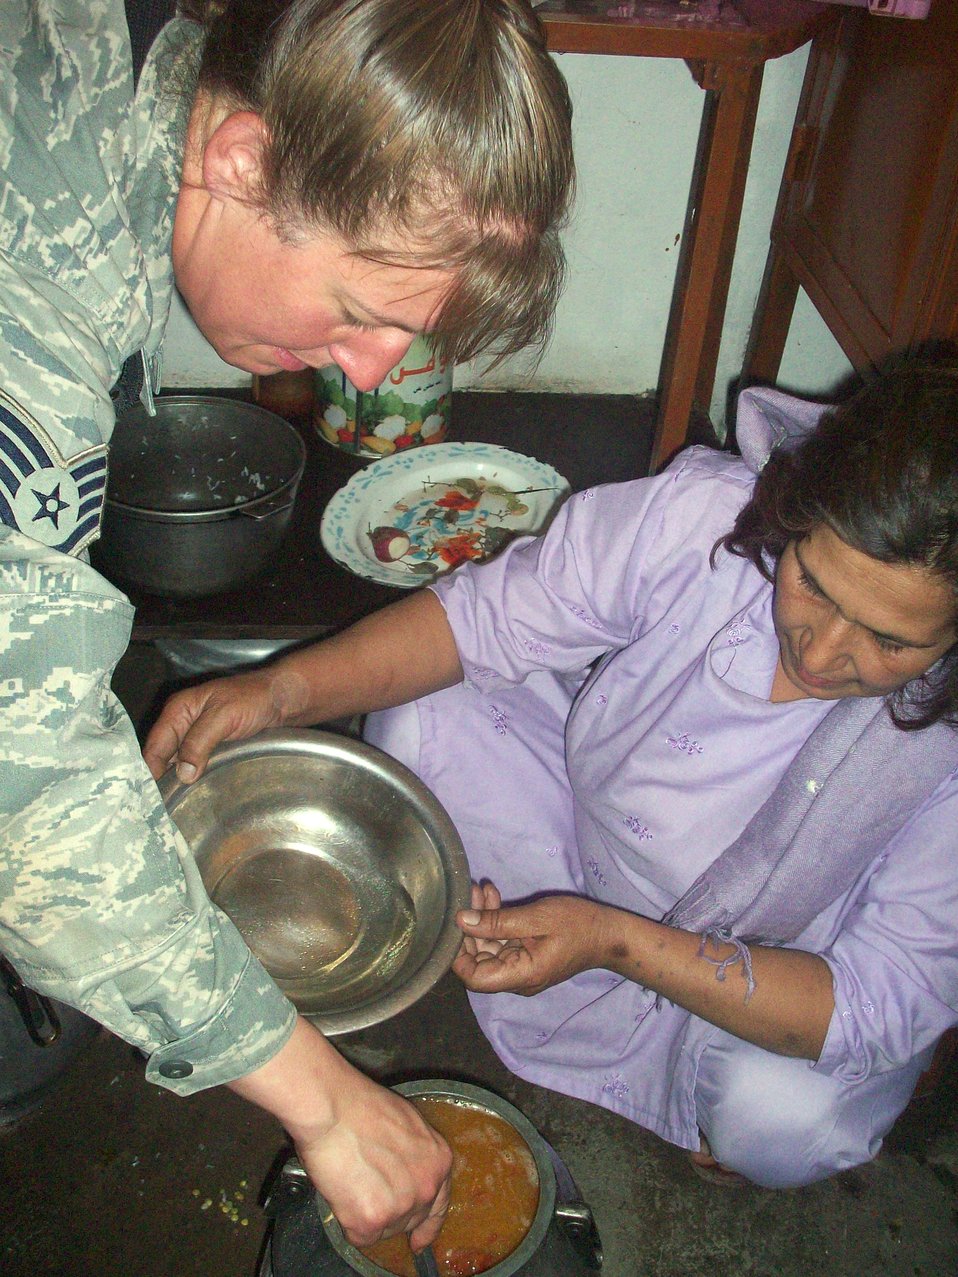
Women in Panjshir Teach Afghan Cuisine

Staff Sgt. Michelle Cooper helps to prepare a special meal. Miriam Panjshiri, director of women's affairs for Afghanistan's Panjshir province, and her sister, Nasrene, hosted the PRT's affairs team for a time of fellowship and an Afghan cooking class Oct. 2. Sergeant Cooper is the services superintendent for the Panjshir Provincial Reconstruction Team.